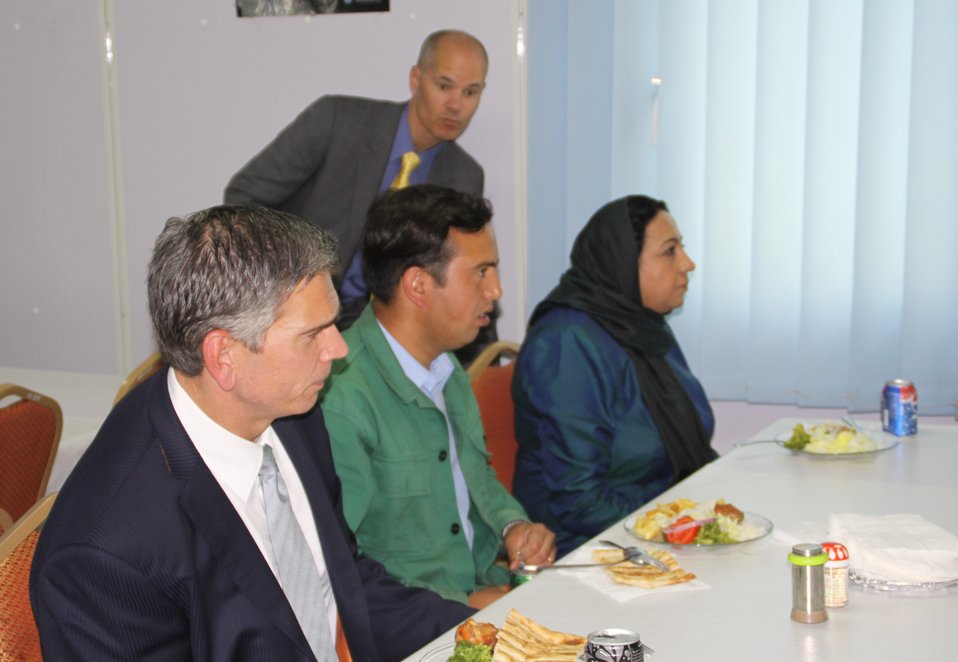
105 MW Tarakhil Power Plant Handover